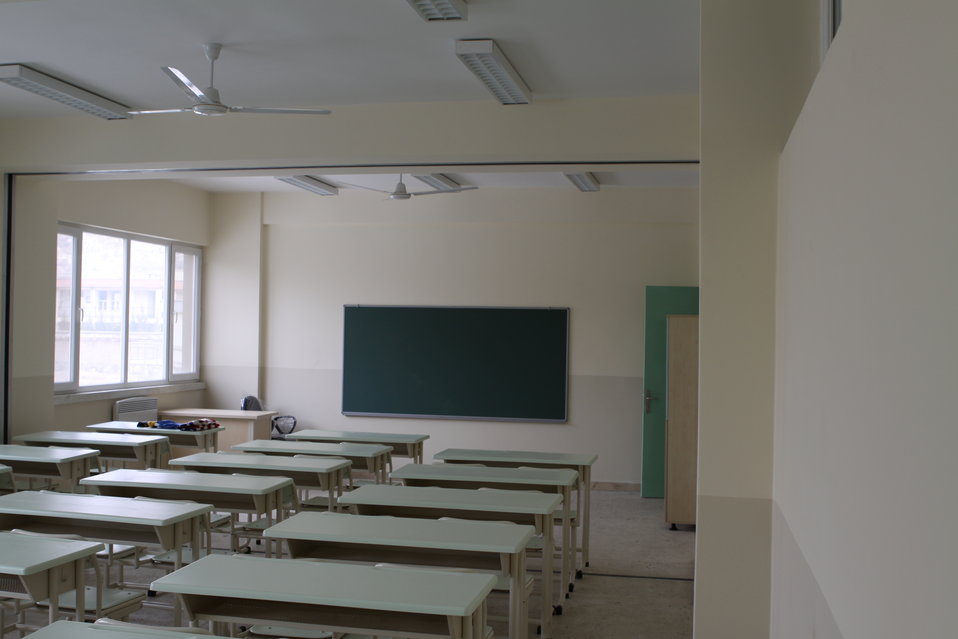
Ghazi high school , Kabul